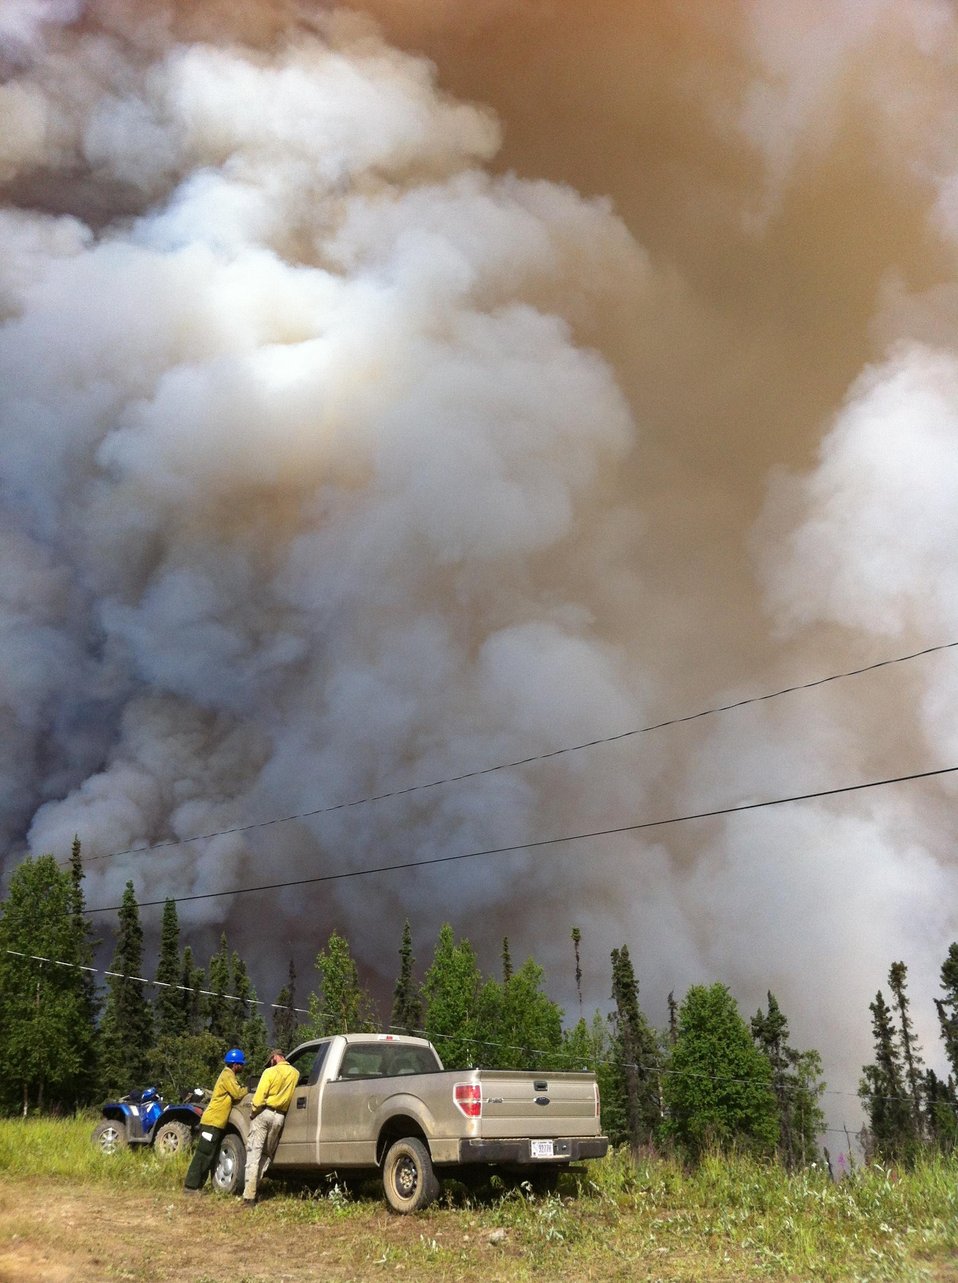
Firefighters study the behavior of the Stewart Creek Fire on Jul. 6, 2013. The Stewart Creek Fire located 25 miles east of North Pole, AK began on Jun. 19, 2013 due to human causes and has consumed an estimated 85, 475 acres. The fire is approximately 57% contained.